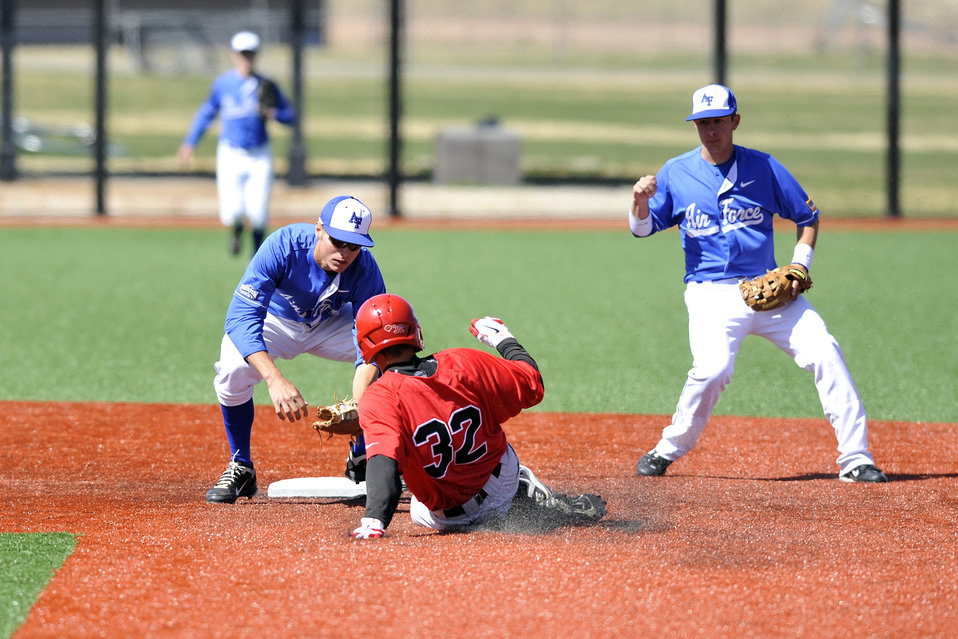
Falcons vs. Aztecs

Sophomore shortstop Matthew Roberts makes the tag against San Diego State base runner Chris Wilson during a match against San Diego State April 22, 2011, at Falcon Field in Colorado Springs, Colo. The Falcons defeated the Aztecs 7-3. The win was the first for the Falcons against the Aztecs in 35 contests dating back to 2003.